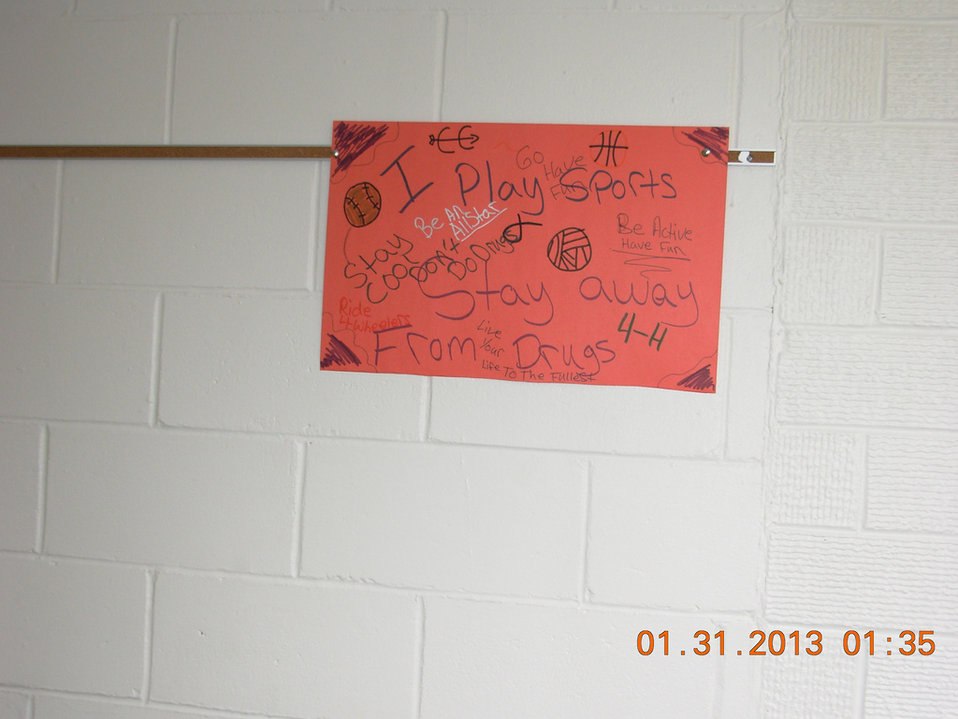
Iowa's SAFE Coalition, NDFW 2013

Van Buren County, IA. SAFE Coalition high school student run groups fighting issues of drug, alcohol, and tobacco abuse during NDFW 2013.